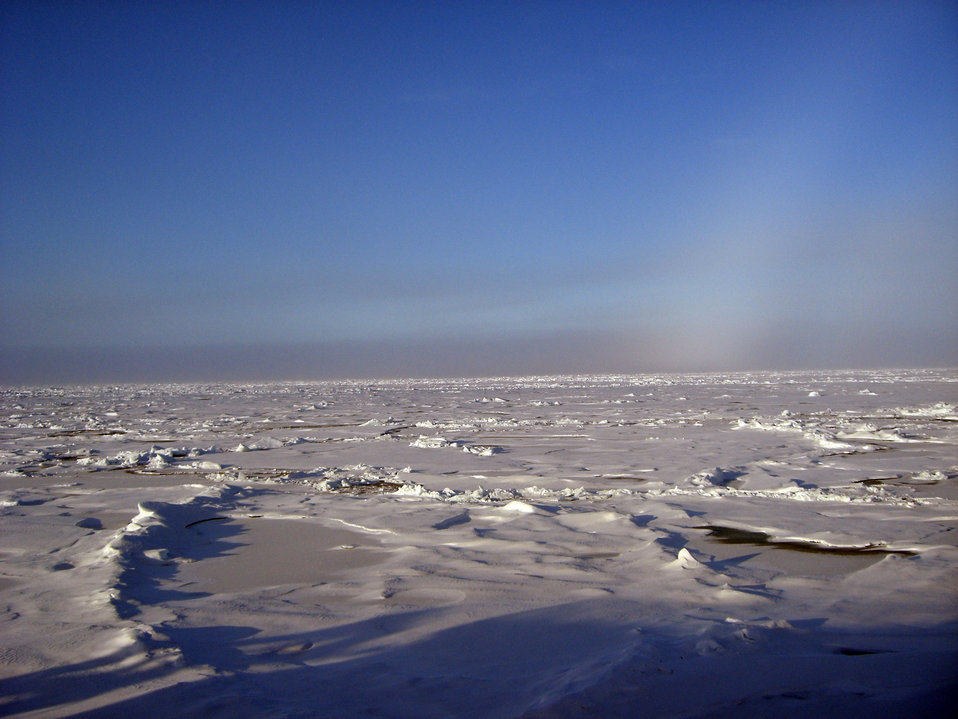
U.S.-Canada Fourth Joint Mission To Map the Continental Shelf in the Arctic Ocean

Views of the U.S.-Canada fourth joint mission to map the continental shelf in the Arctic Ocean in August and September 2011. The 2011 joint mission employed the flagship icebreaker from each country, the U.S. Coast Guard Cutter Healy and the Canadian Coast Guard Ship Louis S. St-Laurent (LSSL), with each ship performing different functions and one ship breaking ice for the other.